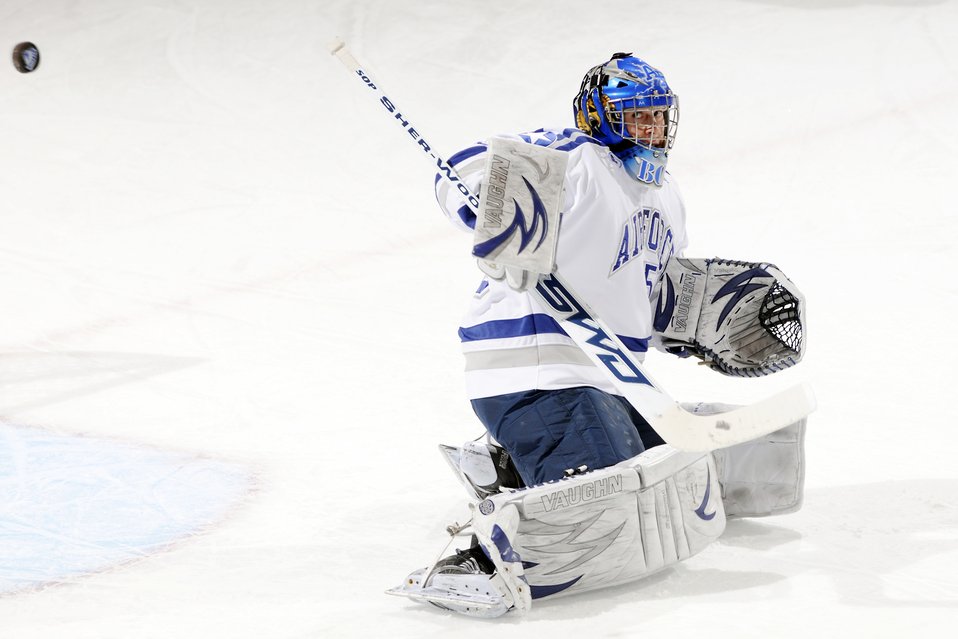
Falcons sweep hockey series

U.S. Air Force Academy freshman goalie David Bosner blocks a shot during warm ups before the Falcon's game against American International College at the Cadet Ice Arena Dec. 5, 2009. Air Force defeated AIC 6-2, sweeping the series with a 5-3 win Dec. 4.